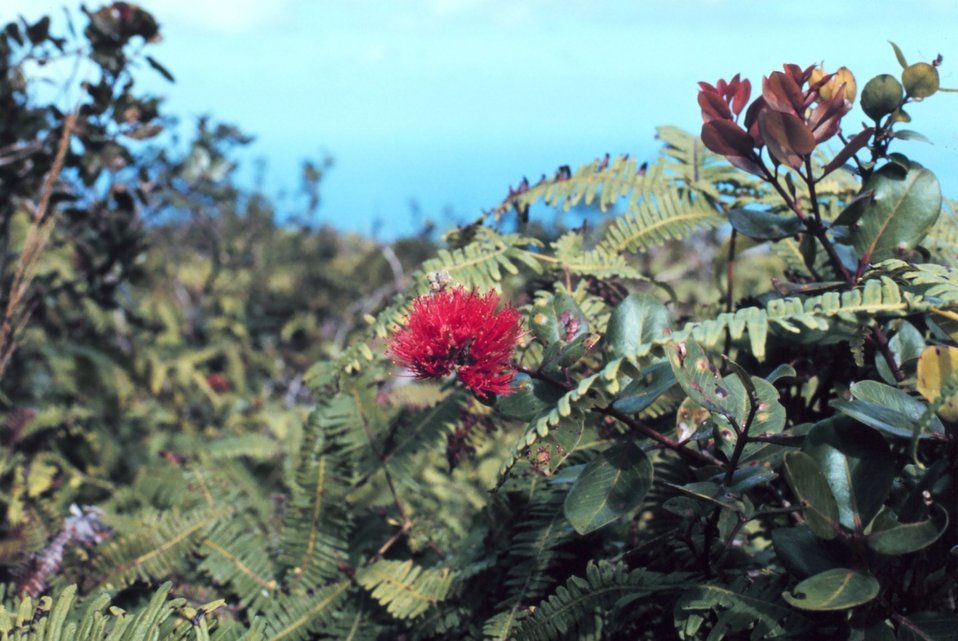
Hawaiian flowers